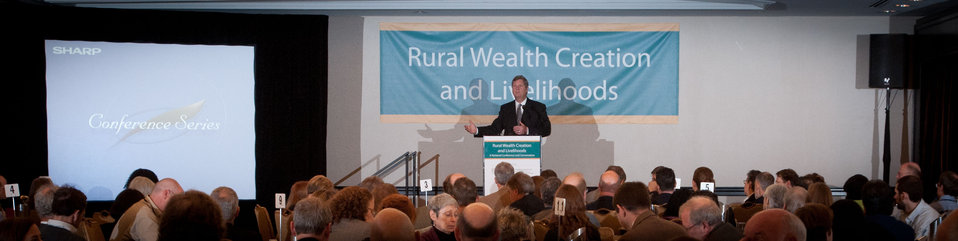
U.S. Department of Agriculture (USDA) Secretary Tom Vilsack was the keynote speaker for the Rural Wealth Creation and Livelihoods national conference for practitioners, researchers and policymakers, held at the Dupont Hotel, Washington DC, on Monday October 3, 2011. USDA partnered with the Ford Foundation to sponsor the conference.